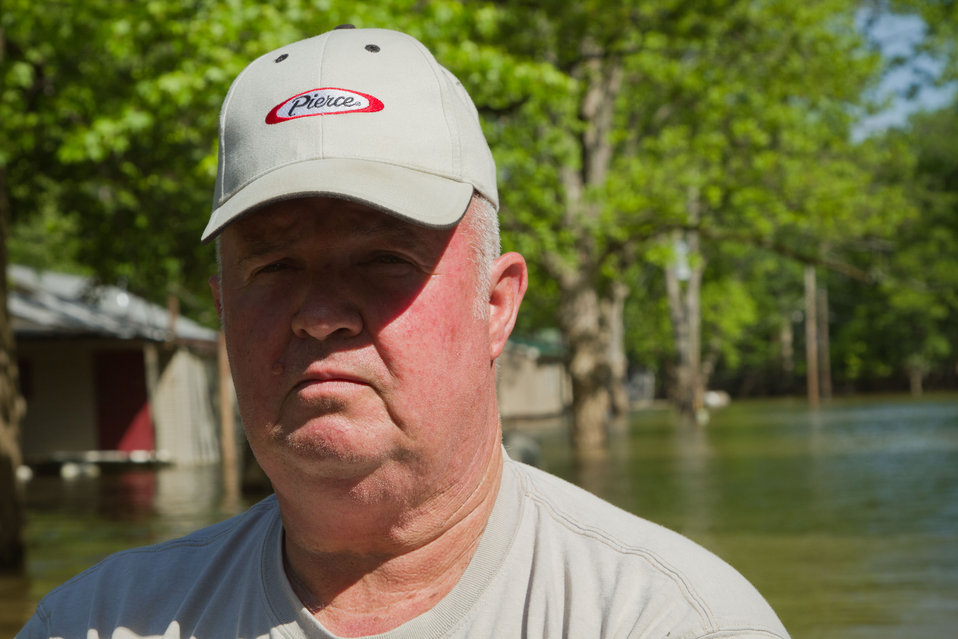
Lauderdale County Disaster Management Director Jim Jarrett uses a motorboat to survey the river flood impact on the people and property of this county in Tennessee, on Saturday, May 21, 2011. Homes were constructed on stilts; or float on Styrofoam blocks tethered to stationary poles. Most homes on floats survived well, but needed extensions welded to the poles before the rivers crested. The one seen to the left of Jarrett might have malfunctioned and became partially submerged and it's propane tank went adrift. The Mississippi and two other rivers border Lauderdale County on three sides. Today’s task was to look at as many of the approximately 300 homes in the county's river basin as possible. This area is near Open Lake.